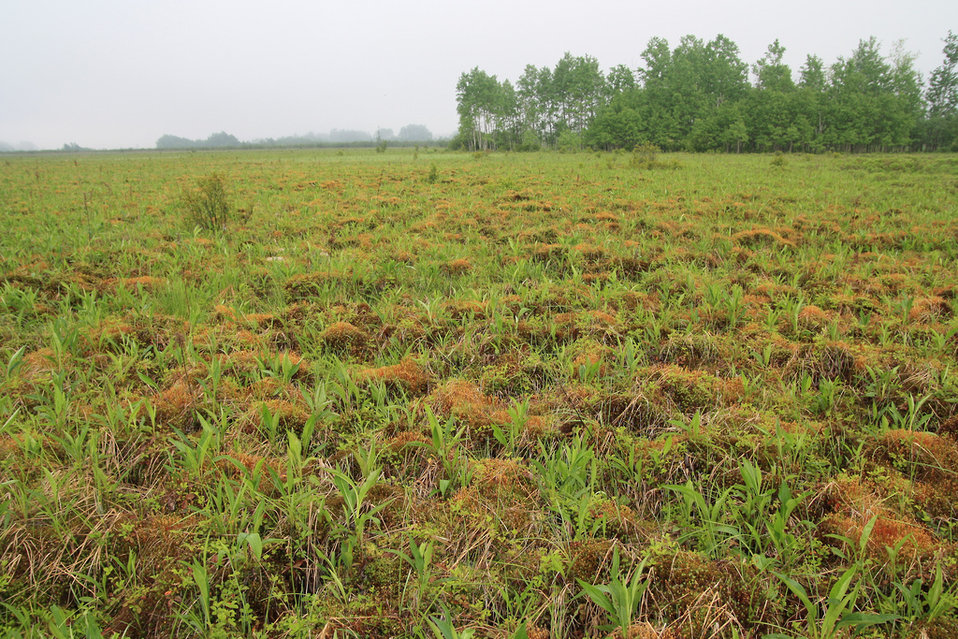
Haircap Moss Wetland

Canaan Valley contains a wetlands complex of about 8,400 acres, making it the largest wetlands system in West Virginia. Of these total wetlands, 5,573 acres are located within Canaan Valley National Wildlife Refuge.